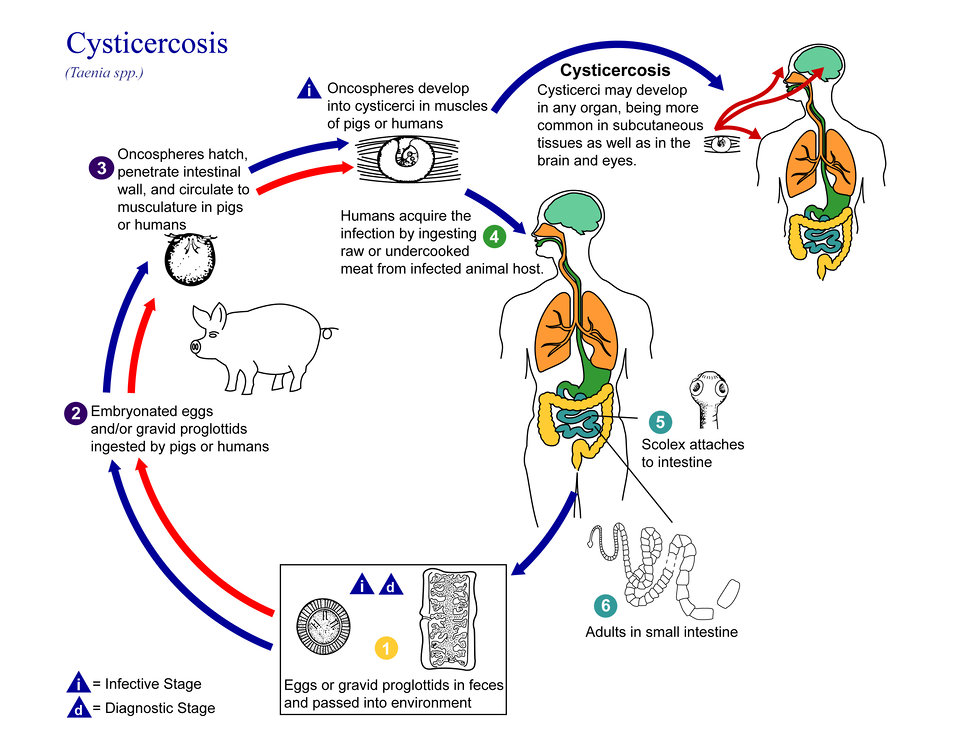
This is an illustration of the life cycle of Taenia spp., the causal agents of Cysticercosis.